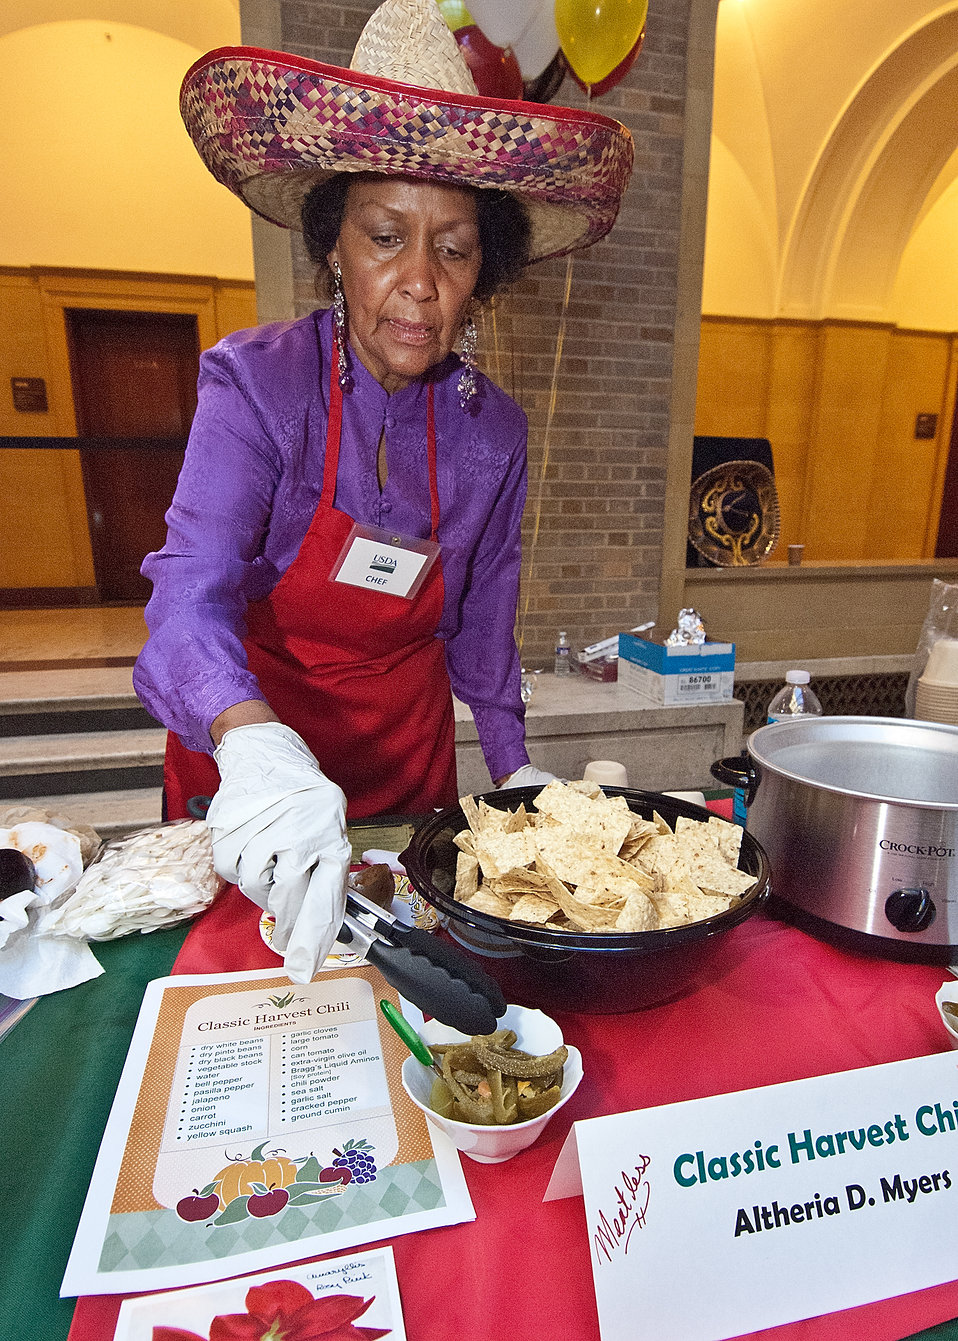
Altheria Myers, Agricultural Research Service dresses her booth with peppers prior to the Second Annual U. S. Department of Agriculture Chili Challenge Contest during Hispanic Heritage Month at USDA in Washington, DC, on Thursday, October 6, 2011. Celebrity chefs and USDA employee chef volunteers used chili’s in delicious recipes to celebrate Hispanic cuisine. The judges for the challenge will be Chefs Toni Tipton-Martin, Chef Pedro Matamoros from 8407 Kitchen Bar, Corporate Executive Chef Lance Lemin, Ed Avalos, Undersecretary, Marketing and Regulatory Programs and Krista Hardin, Chief of Staff.